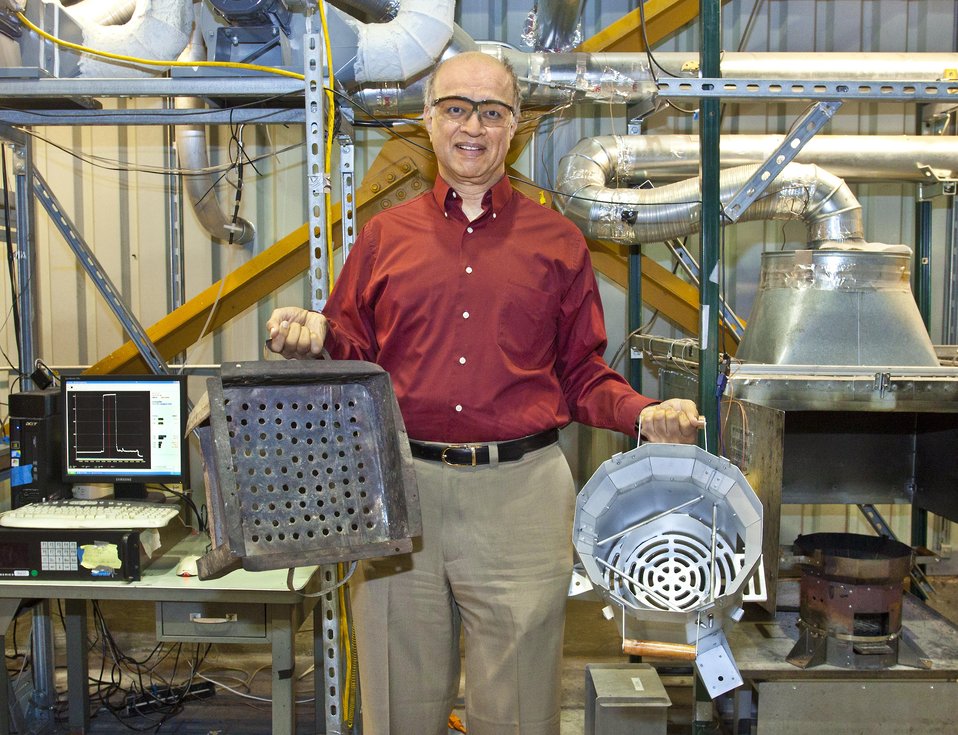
Ashok Gadgil with Haitian and Darfur stoves at the Stove Testing Facility.
Ashok Gadgil is the recipient of the 2012 $100,000 Lemelson-MIT Award for Global Innovation in recognition of his steady pursuit to blend research, invention, and humanitarianism for broad social impact. Gadgil's inventions and innovations are improving the livelihood of more than 100 million people in more than 41 countries on four continents, with estimate annual societal economic benefits exceeding $5 billion per year.